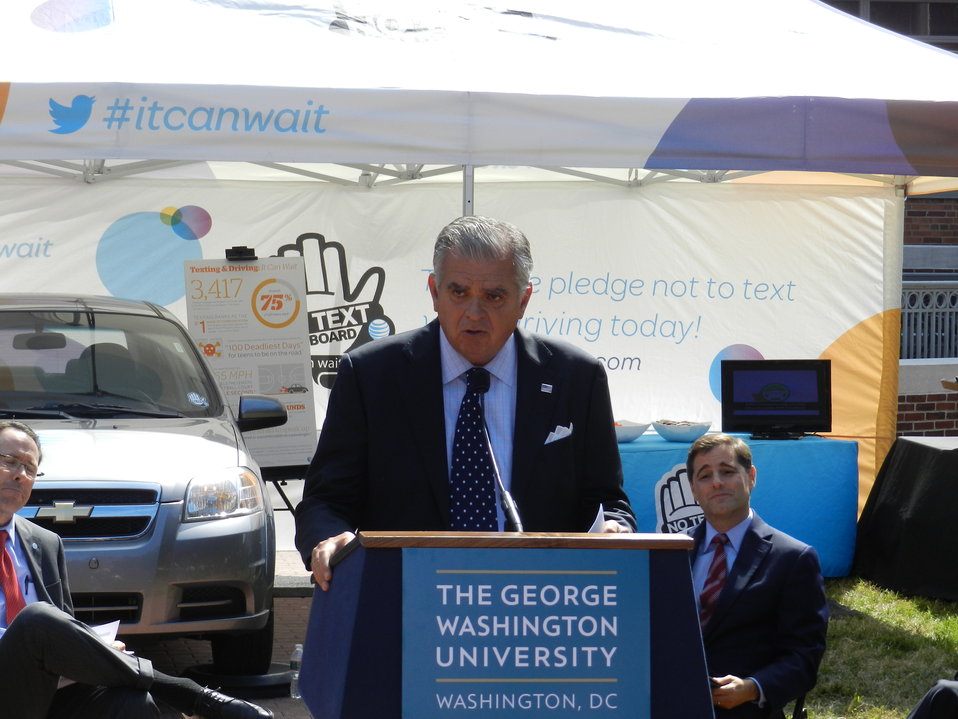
It Can Wait Pledge Day 9.19.12

U.S. Department of Transportation Sec Ray LaHood speaking at the ‘No Text On Board’ Pledge Day Event, The George Washington University, Washington, D.C. September 19, 2012